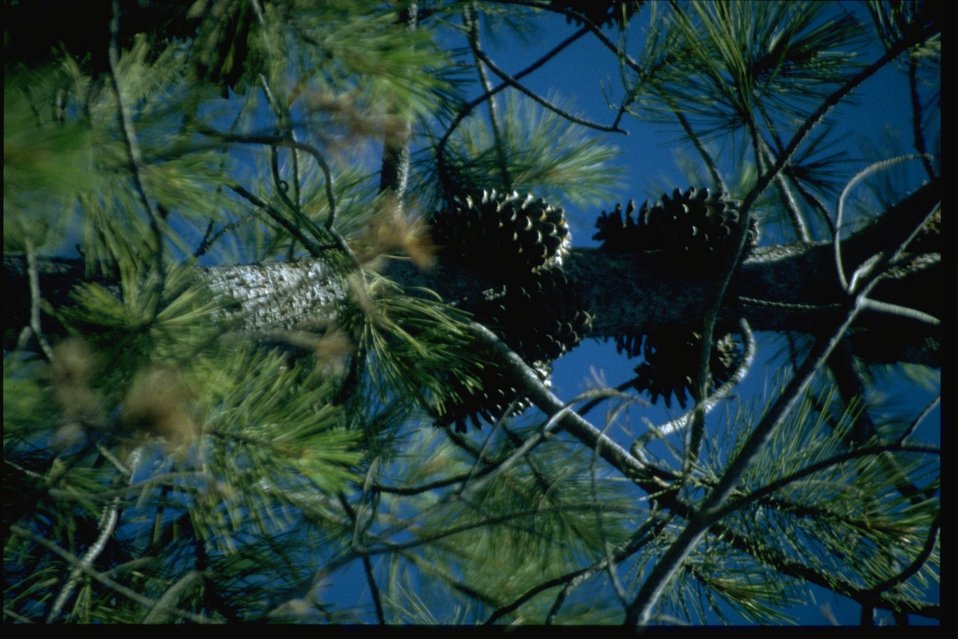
Medium shot of Knobcone Pine, Pinus attenuata.